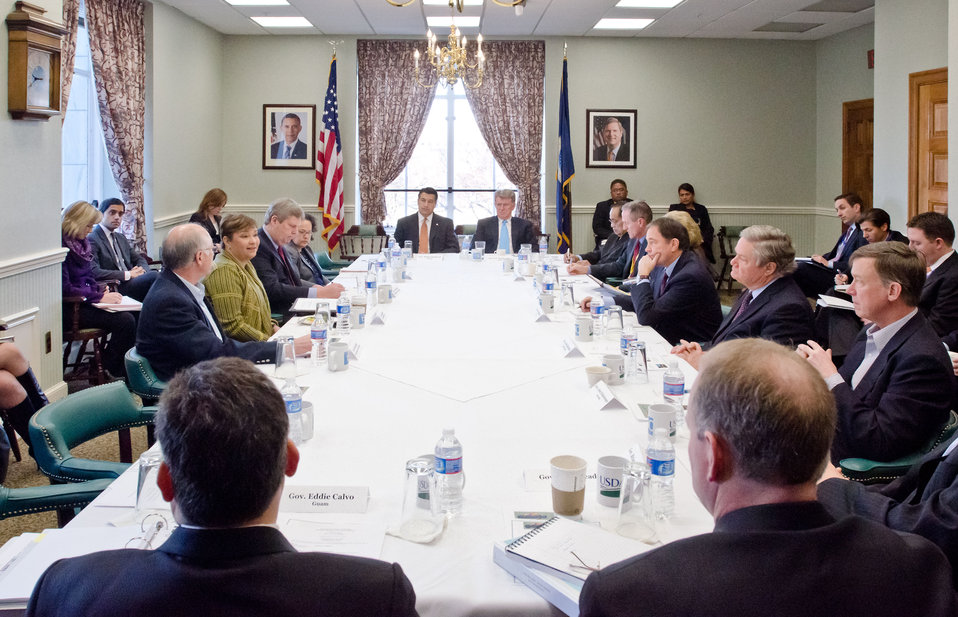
U.S. Environmental Protection Agency Administrator Lisa Jackson talks with Western Governors and Federal Officials, in the Lincoln Room, during a breakfast hosted by Agriculture Secretary Tom Vilsack at the United States Department of Agriculture headquarters, in Washington, D.C., on Sunday, February 26, 2012.